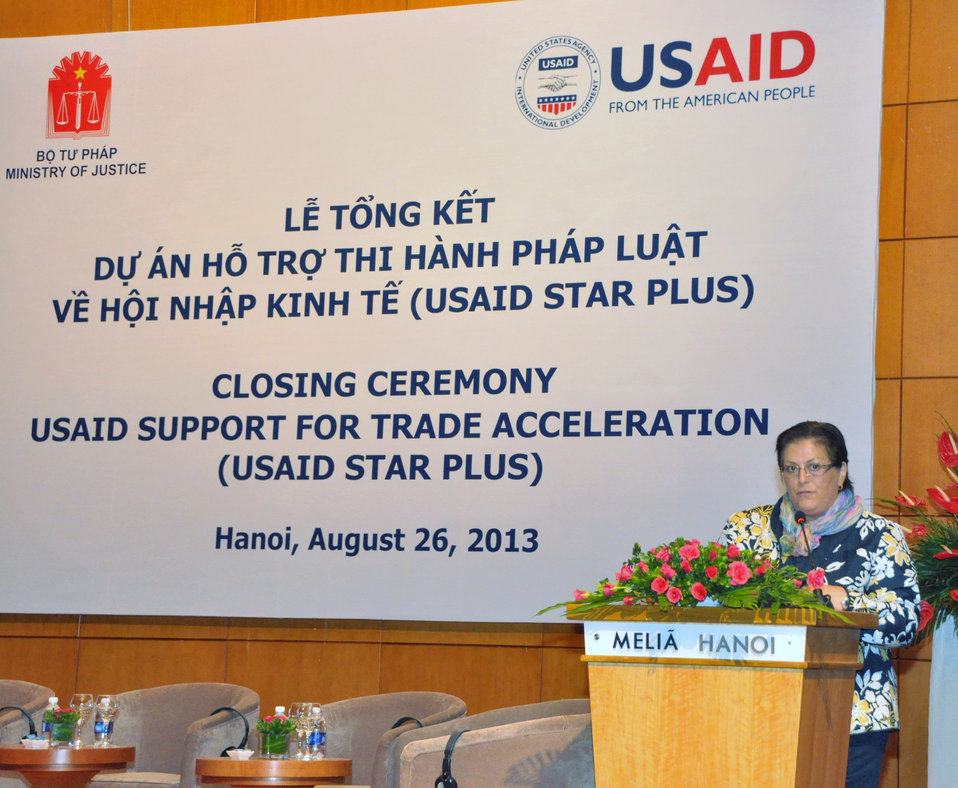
U.S. Embassy Charge d'Affaires Claire Pierangelo speaks at the USAID Support for Trade Acceleration Project (USAID STAR Plus) Closing Ceremony

Hanoi, August 26, 2013.